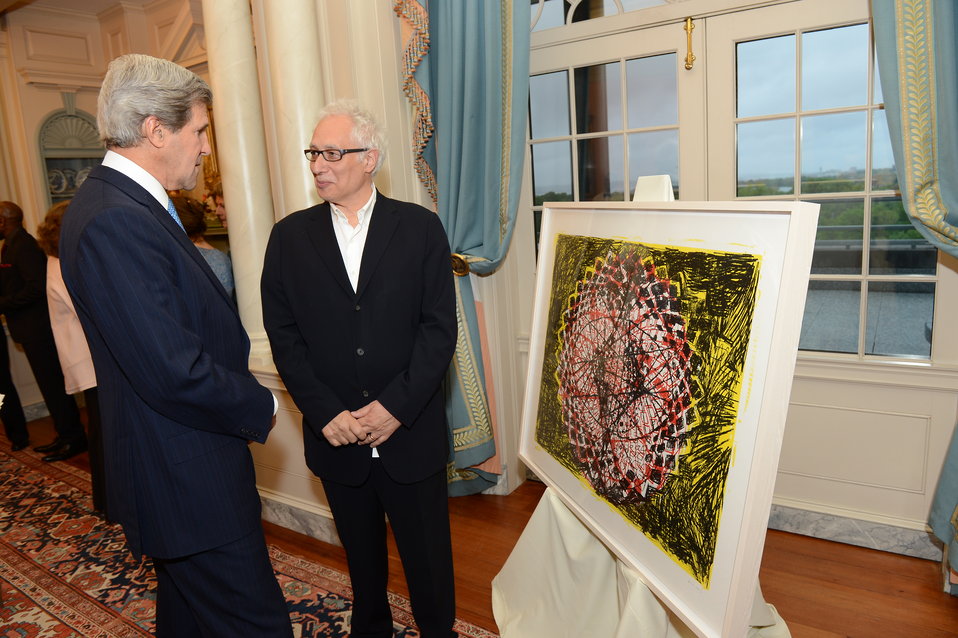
Secretary Kerry Views a Work of Art

U.S. Secretary of State John Kerry views a work of art at the Annual Foundation for Arts and Preservation in Embassies (FAPE) dinner at the U.S. Department of State in Washington, D.C., on April 29, 2013.